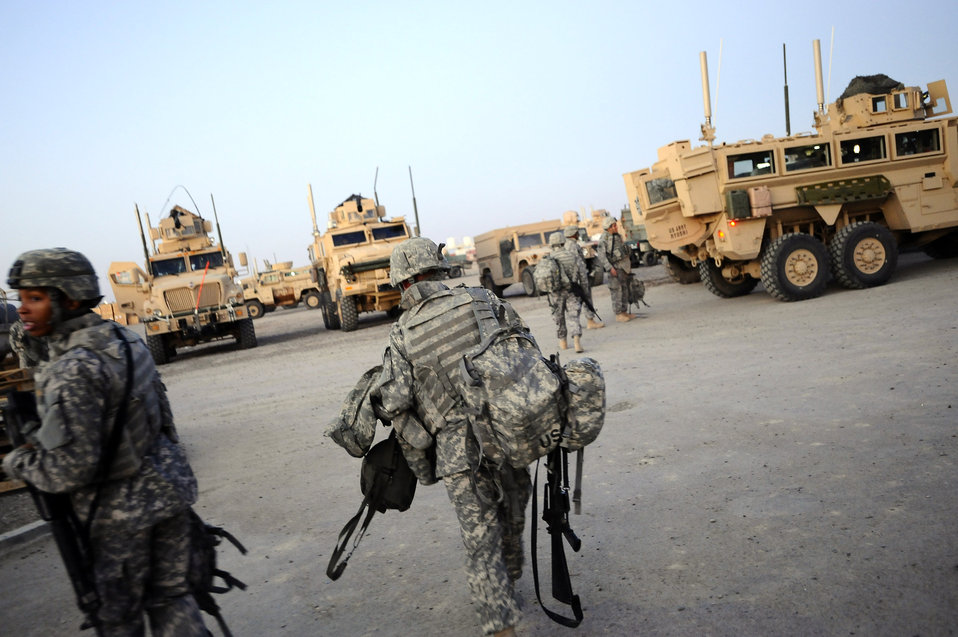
Air Force engineers answer the call from Soldiers in Iraq

Airmen and Soldiers load into the back of a mine-resistant ambush-protected vehicle Dec. 11 at Joint Base Balad, Iraq. The Airmen, who are assigned to the 732nd Expeditionary Civil Engineer Squadron Det. 6, undertake construction projects for the Army, while the Soldiers provide convoy security.